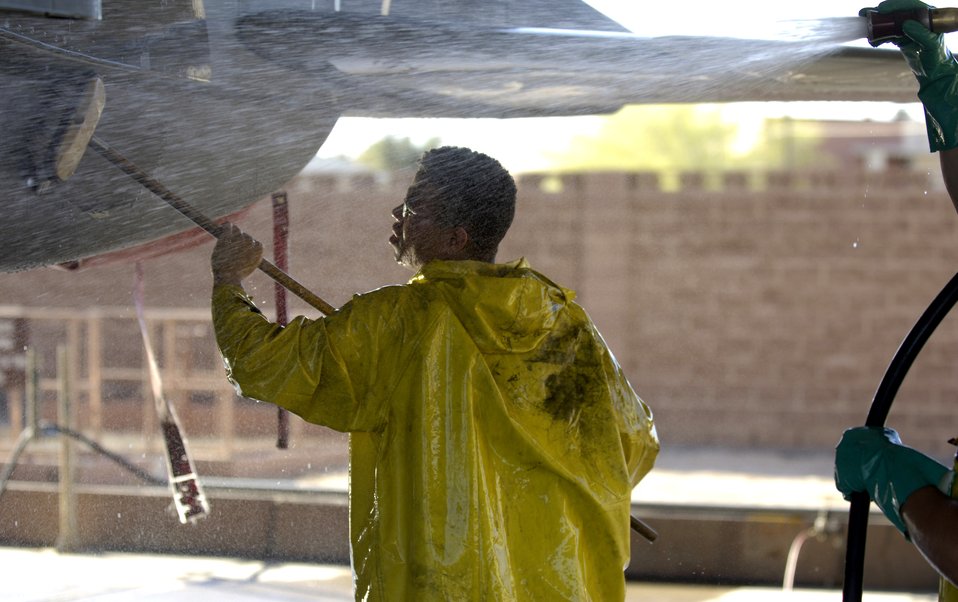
A Strike Eagle gets a bath

Airman 1st Class Brian Roy scrubs a panel on an F-15E Strike Eagle while Senior Airman Edward Taylor works the hose during a 120-day periodic cleaning March 15 at Nellis Air Force Base, Nev. The complete F-15 cleaning process takes approximately four hours with a crew of three. Airman Roy, a weapons specialist, and Airman Taylor, a crew chief, are both assigned to the 57th Aircraft Maintenance Squadron at Nellis.